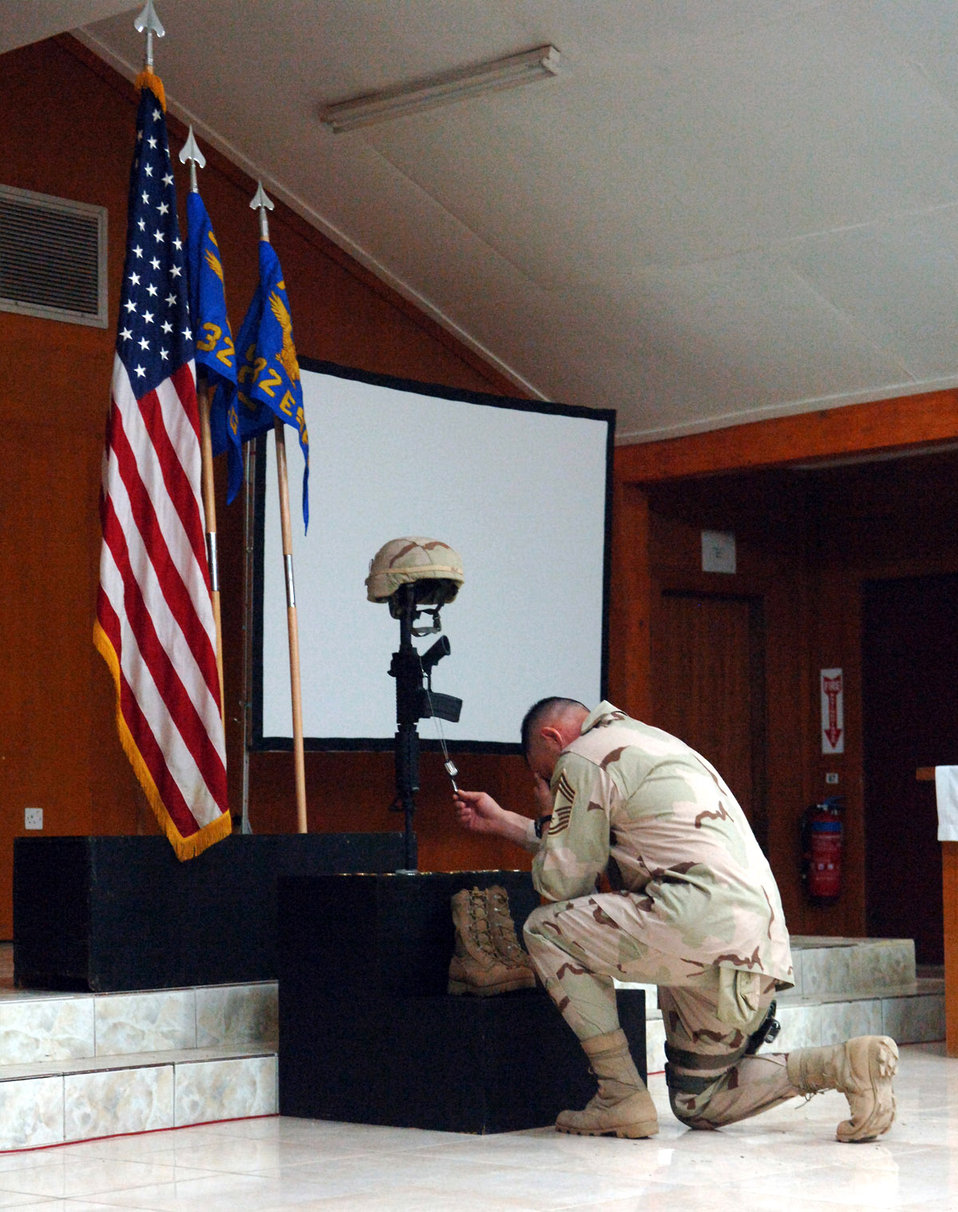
Balad Airmen say goodbye to fallen warrior

Chief Master Sgt. Carlos Smittle holds Staff Sgt. John T. Self's dog tags to show respect during Sergeant Self's memorial ceremony May 18 at Balad Air Base, Iraq. Sergeant Self died during combat operations May 14 in the Baghdad area. Chief Smittle is with the 447th Expeditionary Security Forces Squadron.